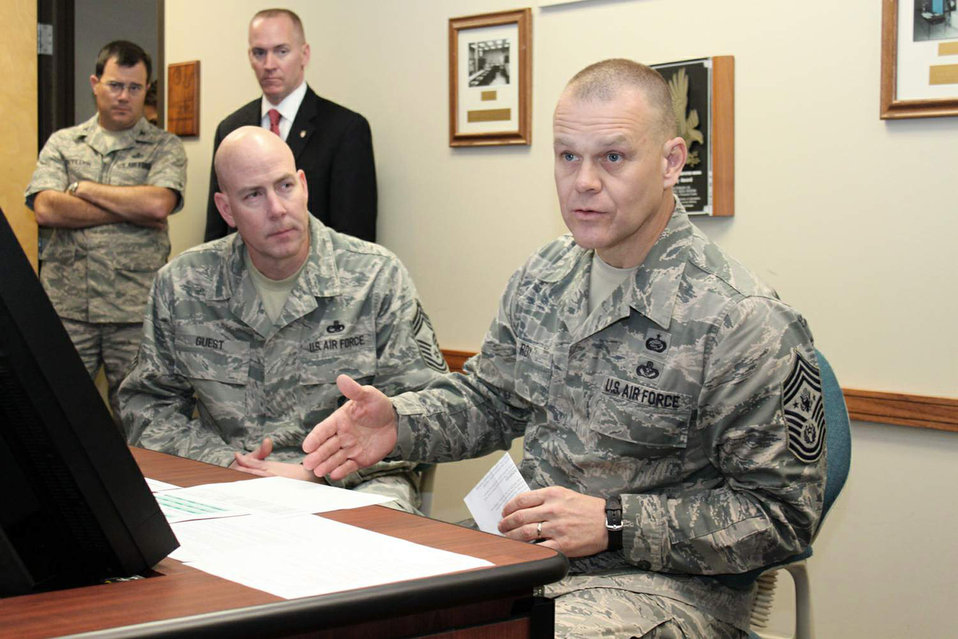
Enlisted development

Chief Master Sgt. of the Air Force James A. Roy discusses the enlisted development tool with the nuclear weapons career field developmental team panel as Chief Master Sgt. Ray Guest, the Air Force's nuclear weapons career field manager, looks on March 31, 2011, at Randolph Air Force Base, Texas.